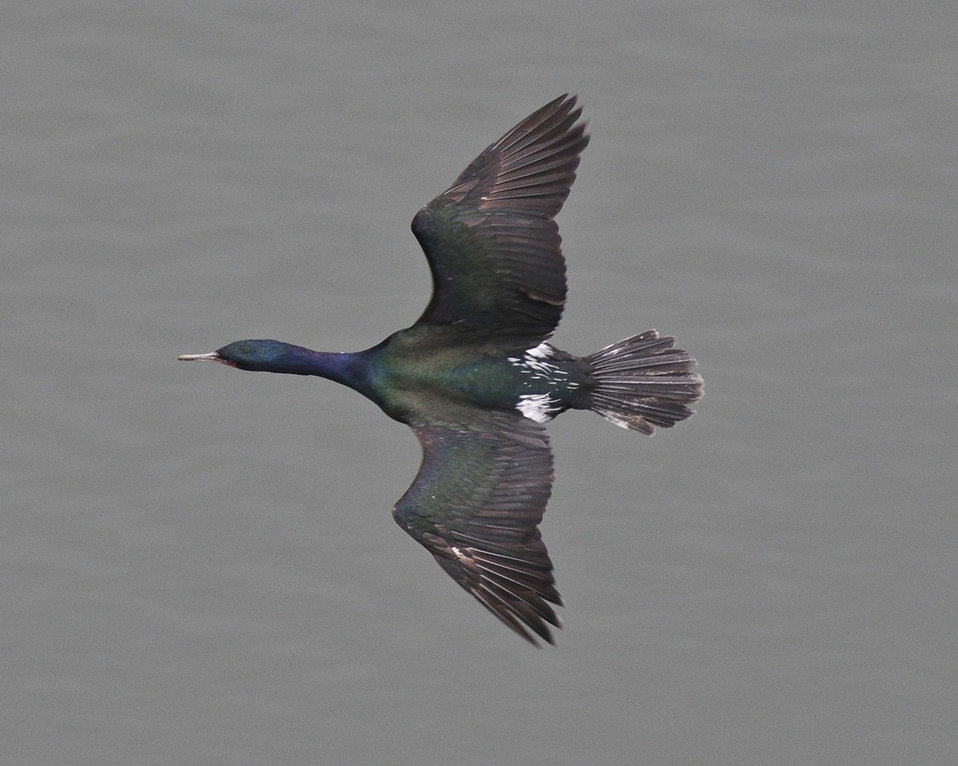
pelagic cormorant

Oregon Islands National Wildlife Refuge, OR